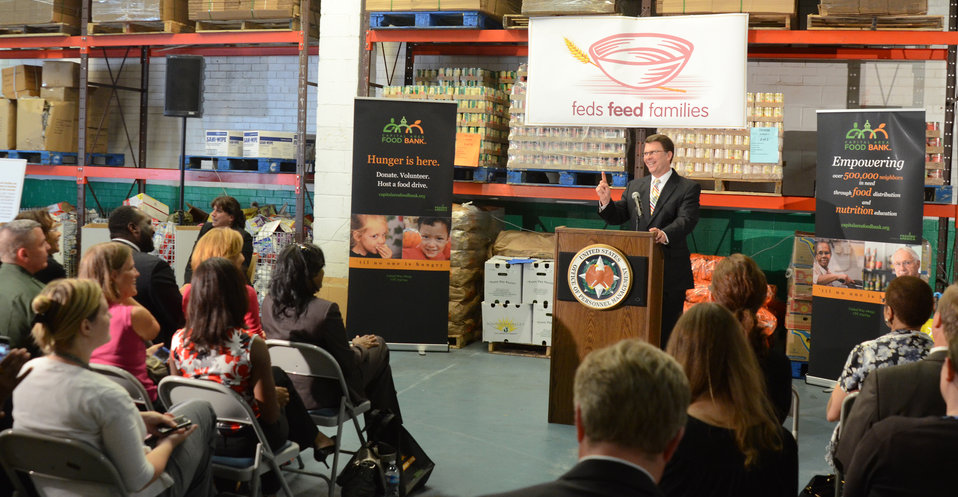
John Berry, Director, U.S. Office of Personnel Management (OPM) makes remarks at the Feds Feed Families Kick-Off event at the Capital Area Food Bank (CAFB) in Washington, D.C., on Monday, June 11, 2012.